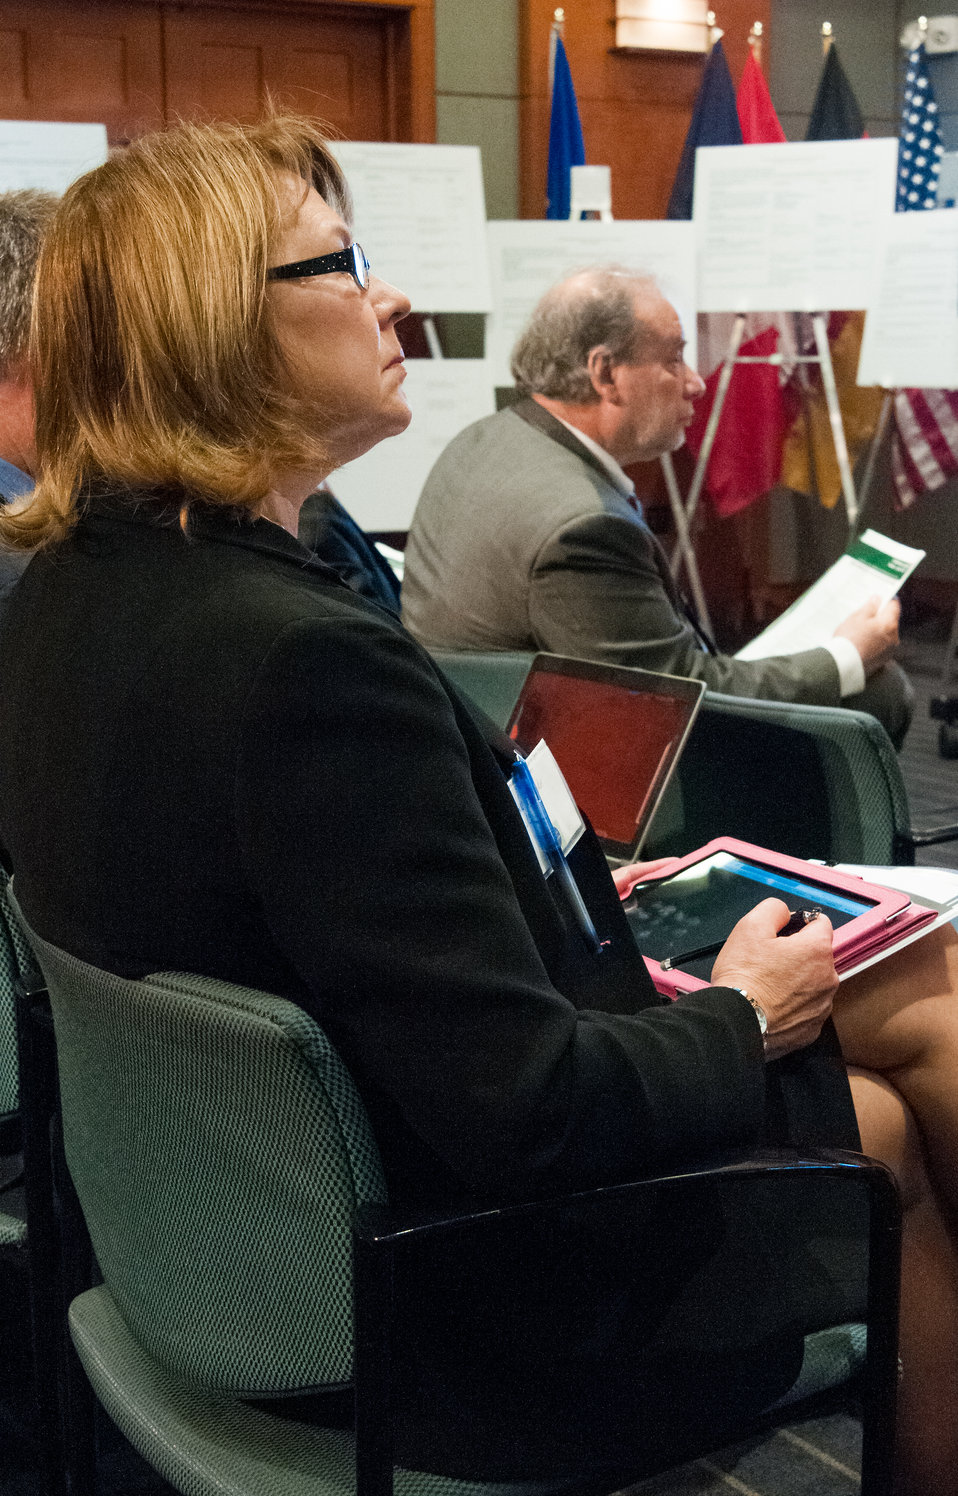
Agriculture Deputy Under Secretary Research, Education and Economics (REE) Dr. Ann Bartuska listens to panelists during the second day of the two day G-8 International Conference on Open Data for Agriculture in Washington, D.C. on Tuesday, Apr. 30, 2013. The conference launched a new 'virtual community' of Food, Agriculture, and Rural data on Data.gov-the U.S. Government's data sharing website-to catalogue America's publicly available agricultural data and increase the ability of the public to find, download, and use datasets that are generated and held by the Federal Government. The data community features a collection of more than 300 newly cataloged datasets, databases, and raw data sources related to food, agriculture, and rural issues from agencies across the U.S. Government. In addition to the data catalog, the virtual community shares a number of applications, maps and tools designed to help farmers, scientists and policymakers improve global food security and nutrition.